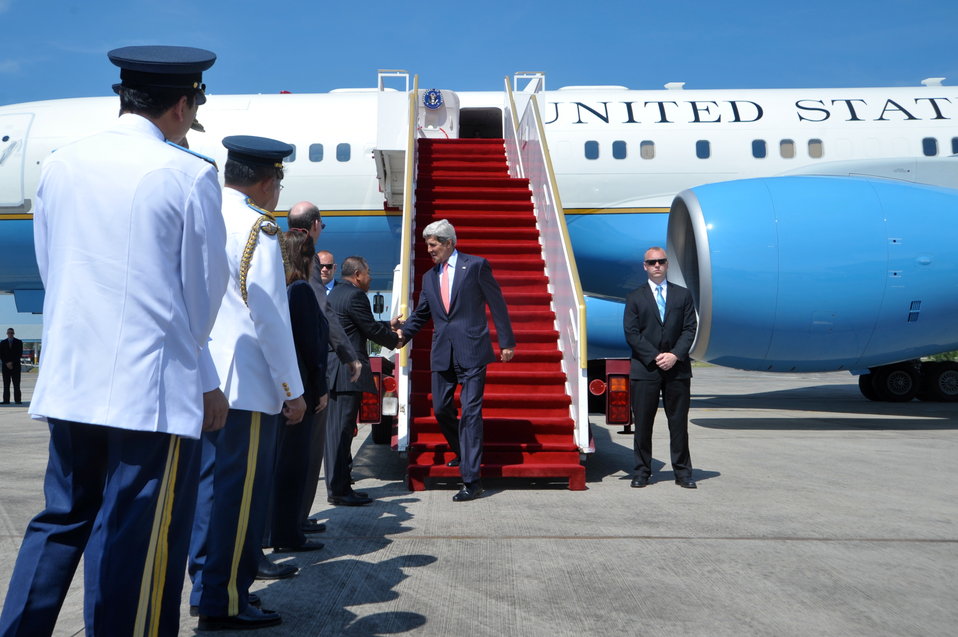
Secretary Kerry Arrives in Brunei for the ASEAN Meeting

U.S. Secretary of State John Kerry arrives in Bandar Seri Begawan, Brunei, to attend an ASEAN ministerial meeting on July 1, 2013.